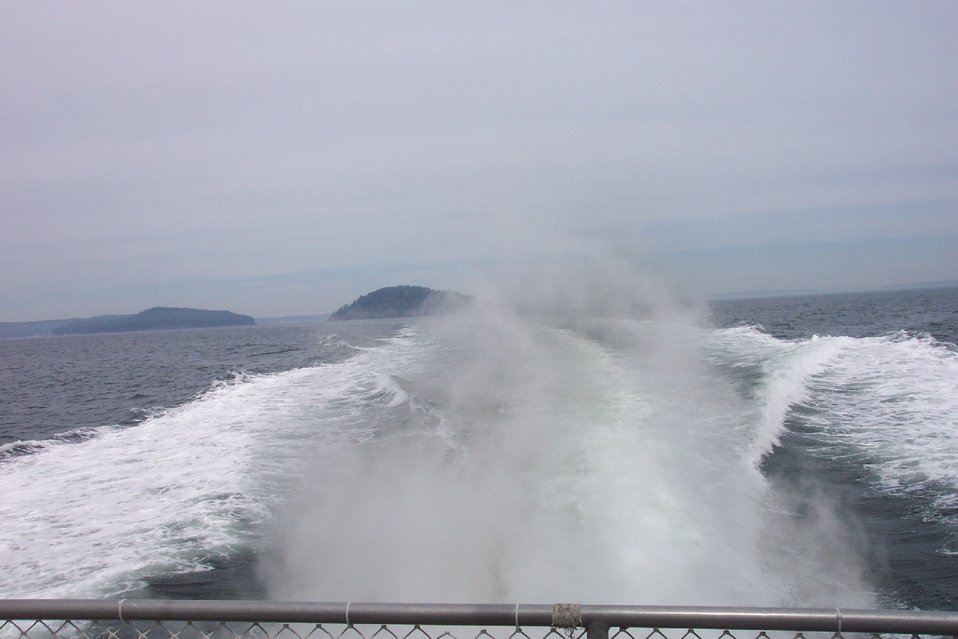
Leaving Bar Harbor behind on a whale-watching cruise to the Gulf of Maine.